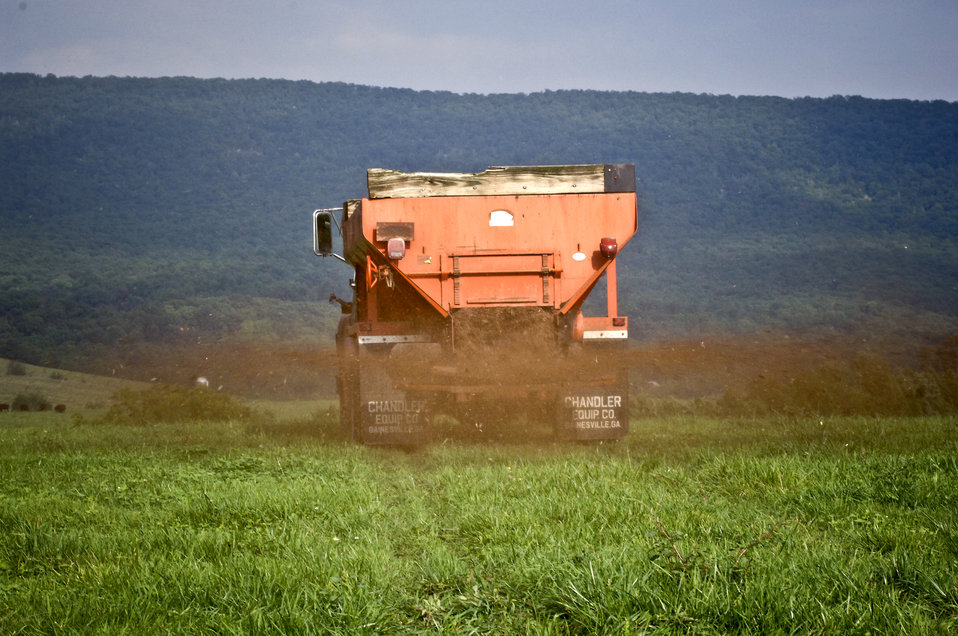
Farmers in Rockingham County, Virginia spread poultry litter in their fields on September 9, 2008 following guidelines established by the Virginia Poultry Waste Management Act of 1999. These farmers are participating in the U.S. Department of Agriculture (USDA) Natural Resource Conservation Service (NRCS) Chesapeake Bay Watershed Initiative (CBWI). CBWI is voluntarily program that farmers, ranchers and forestland owners install conservation practices on hundreds of thousands of acres annually to help support rural economies, protect wildlife habitat and improve water quality in the Chesapeake Bay Watershed.